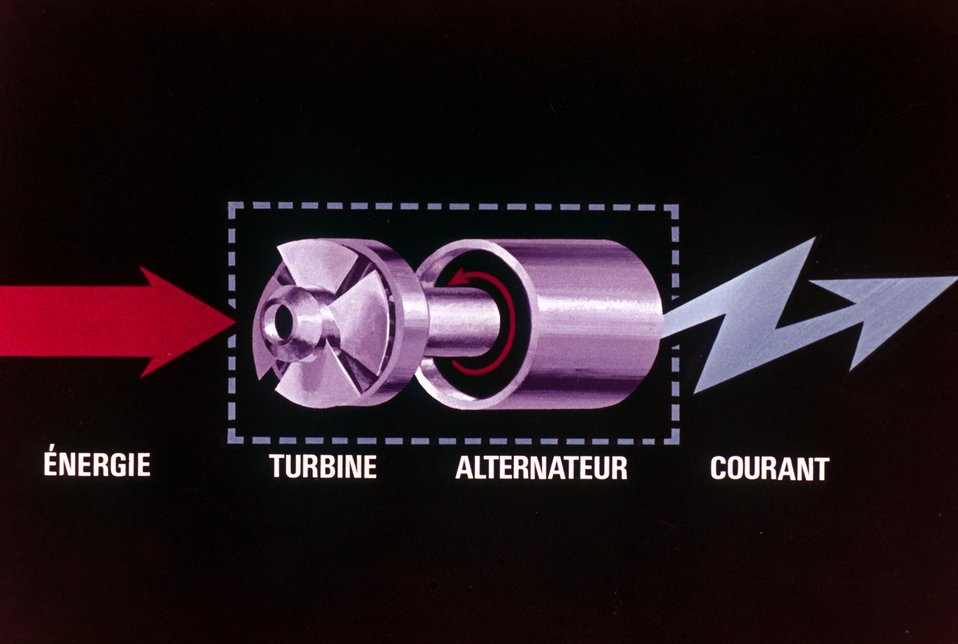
Comment est produite l'ÐlectricitÐ?